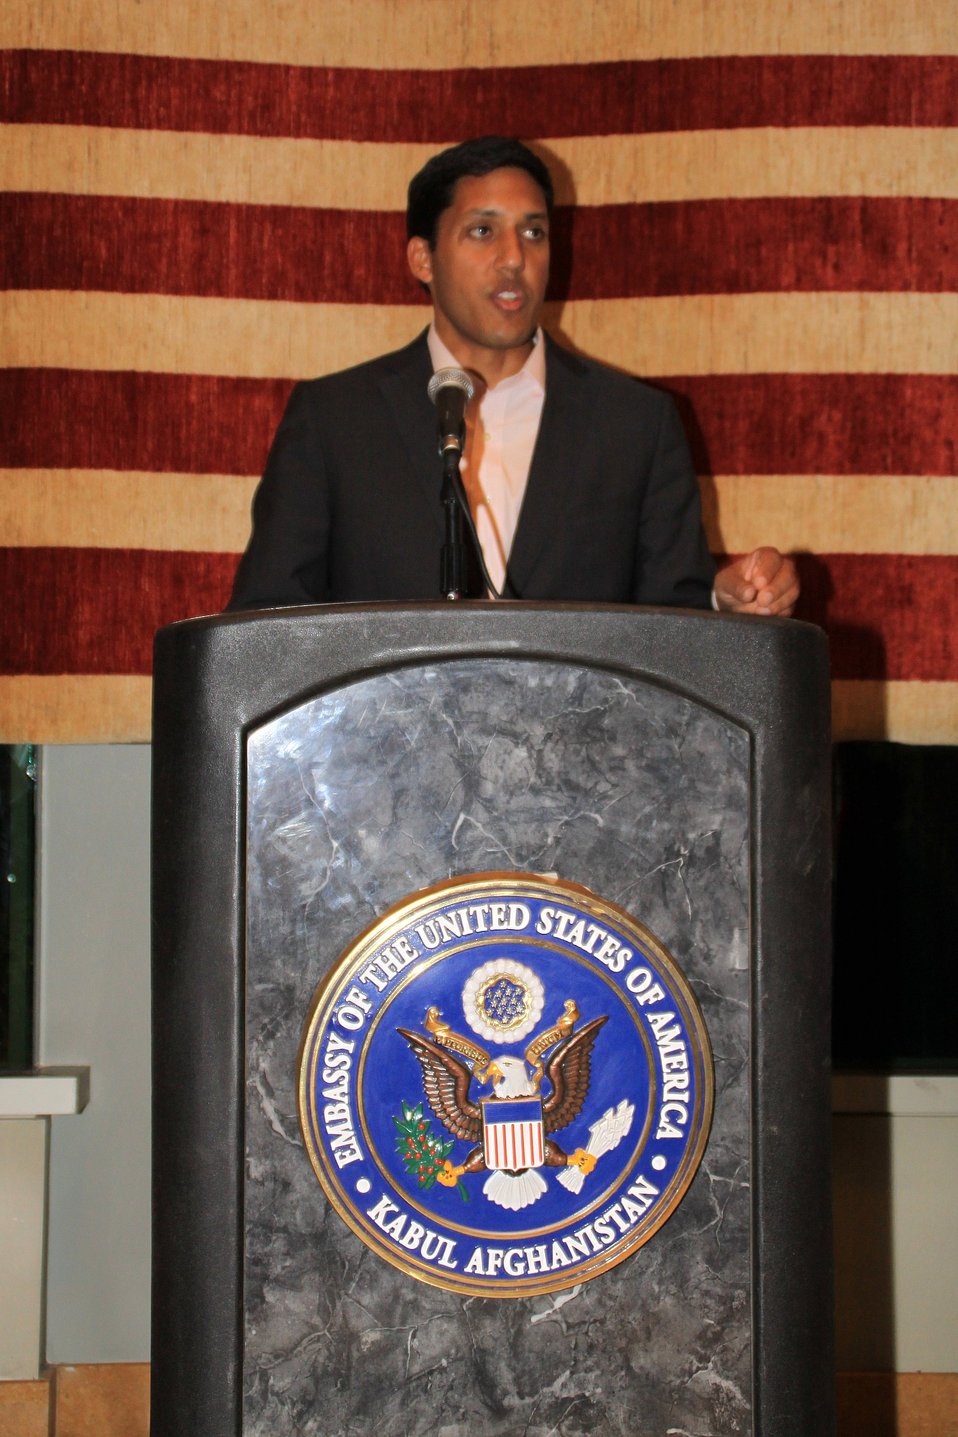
US Embassy Town Hall July 21, 2010